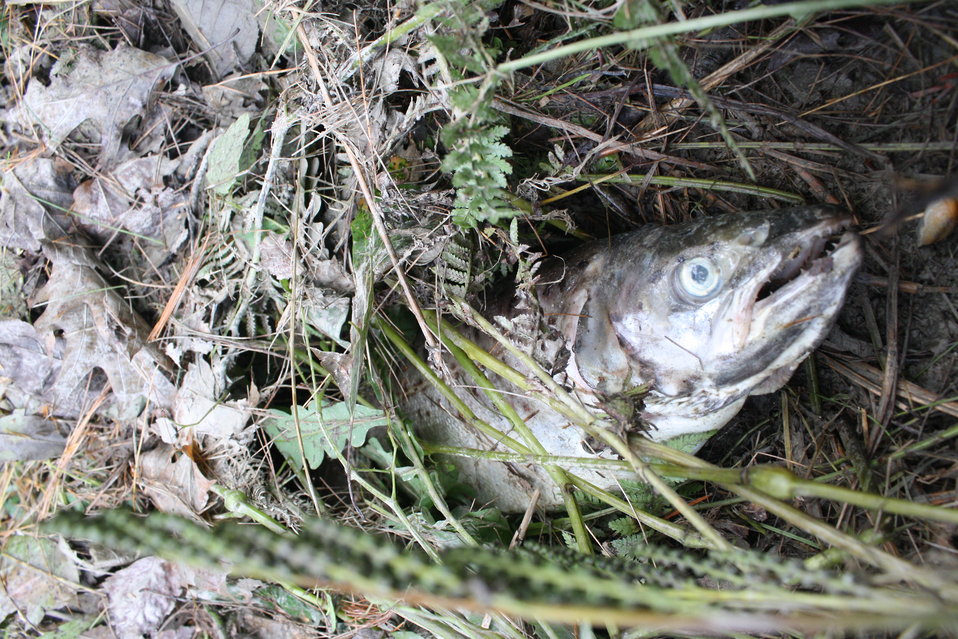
Dead fish after Hurricane Irene flood event

High flood waters breached some circular fish rearing pools at White River National Fish Hatchery during Hurricane Irene. Some fish escaped, and were left stranded by receding flood waters.